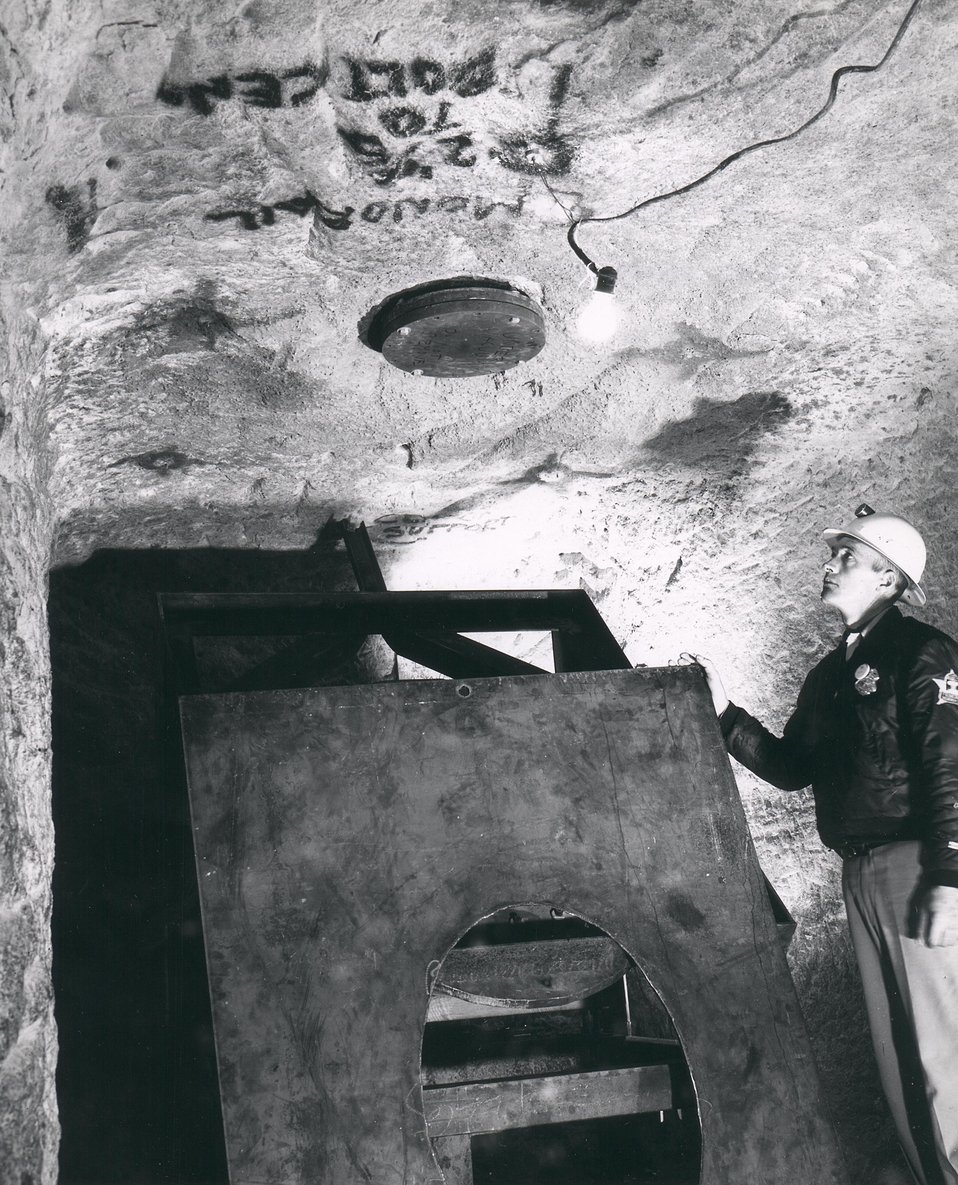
Carlsbad, New Mexico...Gnome zero room showing the end of the prompt sampling pipe (in the ceiling) which reaches from the cavity to the surface, and part of the neutron physics equipment. Circa 1962.